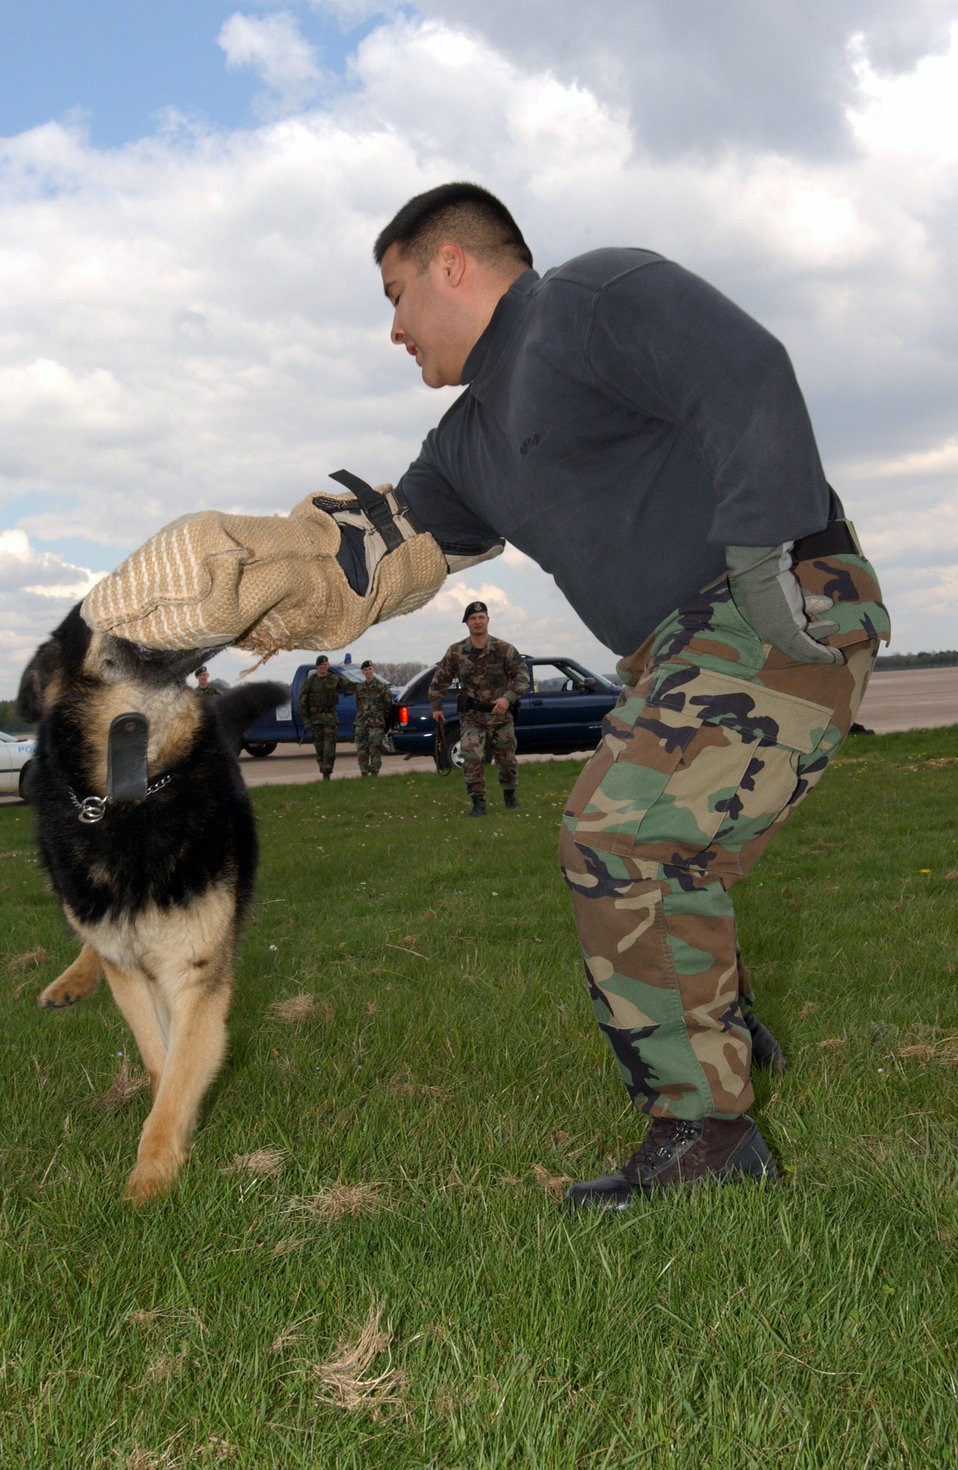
Biting the suspect

ROYAL AIR FORCE FAIRFORD, England -- Ben apprehends a